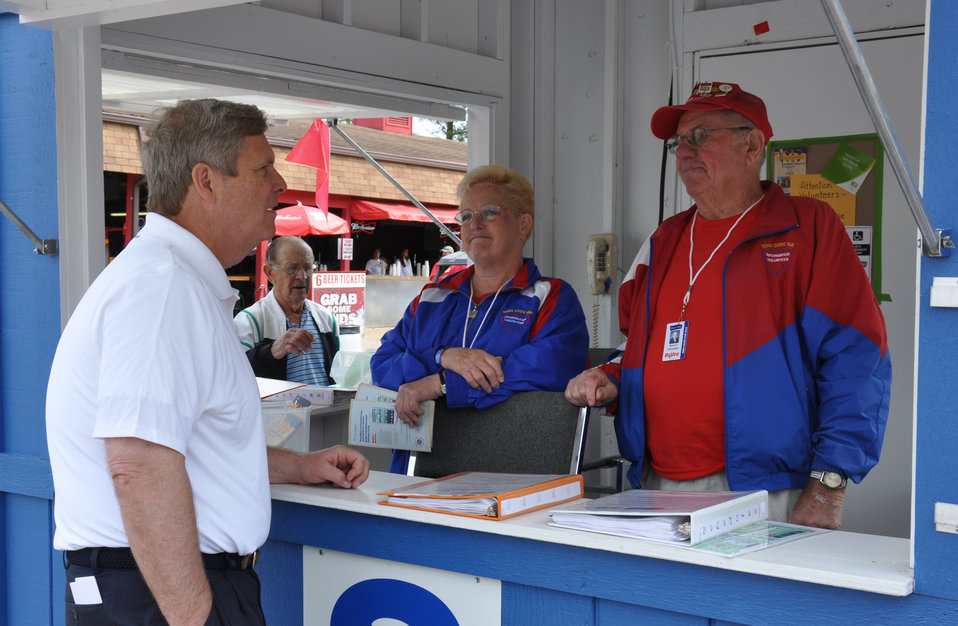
Agriculture Secretary Tom Vilsack (left) talking with stakeholder during his visit to the Iowa State Fair in Des Moines, Iowa, on Thursday, August 16, 2012.

The Secretary was in Iowa As part of continuing steps by the Obama Administration to assist livestock producers in response to the historic drought. USDA will utilize nearly $16 million in financial and technical assistance to immediately help crop and livestock producers in 19 states to cope with the adverse impacts of the historic drought. In addition, USDA will initiate a transfer of $14 million in unobligated program funds into the Emergency Conservation Program. These funds can be used to assist in moving water to livestock in need, providing emergency forage for livestock, and rehabilitating lands severely impacted by the drought. Together these efforts should provide nearly $30 million to producers struggling with drought conditions.Most recently, Secretary Vilsack signed disaster designations for an additional 44 counties in 12 states including Iowa as primary natural disaster areas due to damage and losses caused by drought and excessive heat.